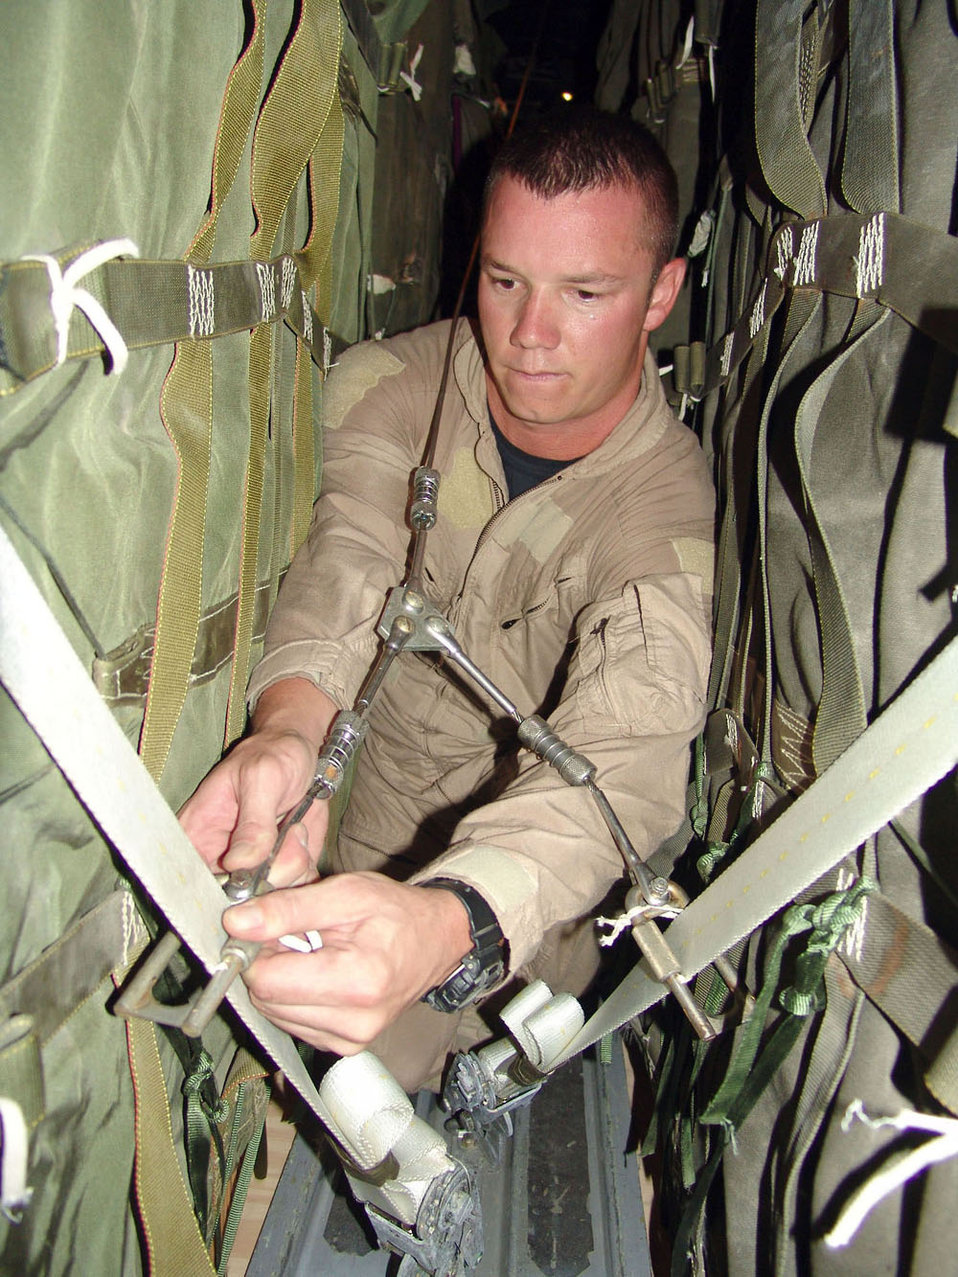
Airmen support Soldiers with airdrop

SOUTHWEST ASIA -- Senior Airman David Sanders installs a guillotine knife and Y-adapter extraction cable used for container delivery system airdrops. This airdrop mission delivered 48 bundles containing about 69,000 pounds of food rations for U.S. and Iraqi Soldiers engaged in combat operations against anti-Iraqi forces. Airman Sanders is a loadmaster with the 737th Expeditionary Airlift Squadron at a forward-deployed location and is from Pope Air Force Base, N.C.